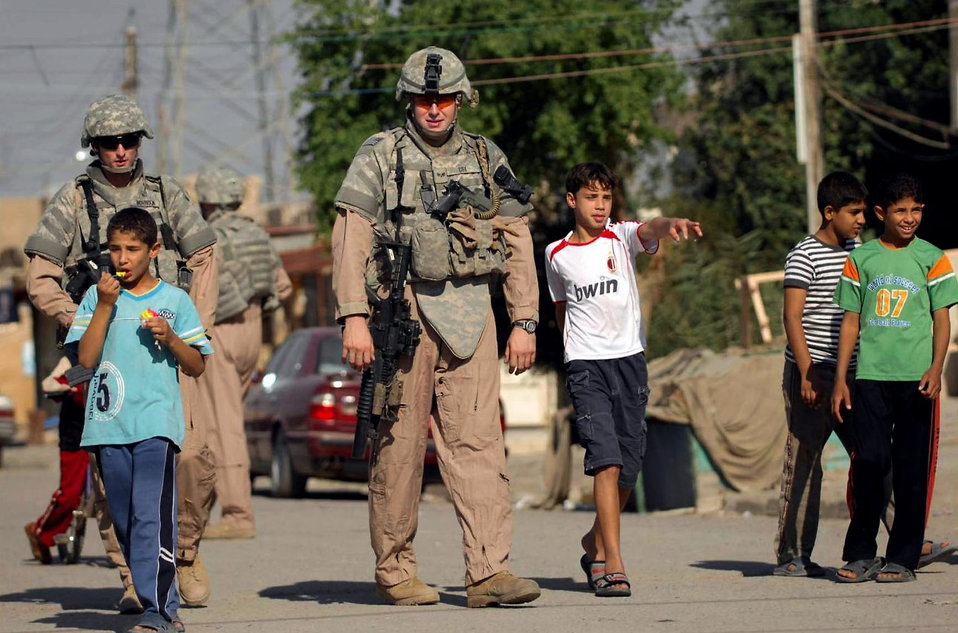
On patrol in Baghdad

Children swarm around Airmen during a police transition team joint patrol with Iraqi police Nov. 7 in the Al-Bayaa community of southern Baghdad, Iraq. As security situations improve in the area, children and citizens are more comfortable to interact with both the IP and the coalition force police. The Airmen are assigned to the 732nd Expeditionary Security Forces Squadron Det. 3 and attached to the Army's 716th Military Police Battalion, 18th MP Brigade.